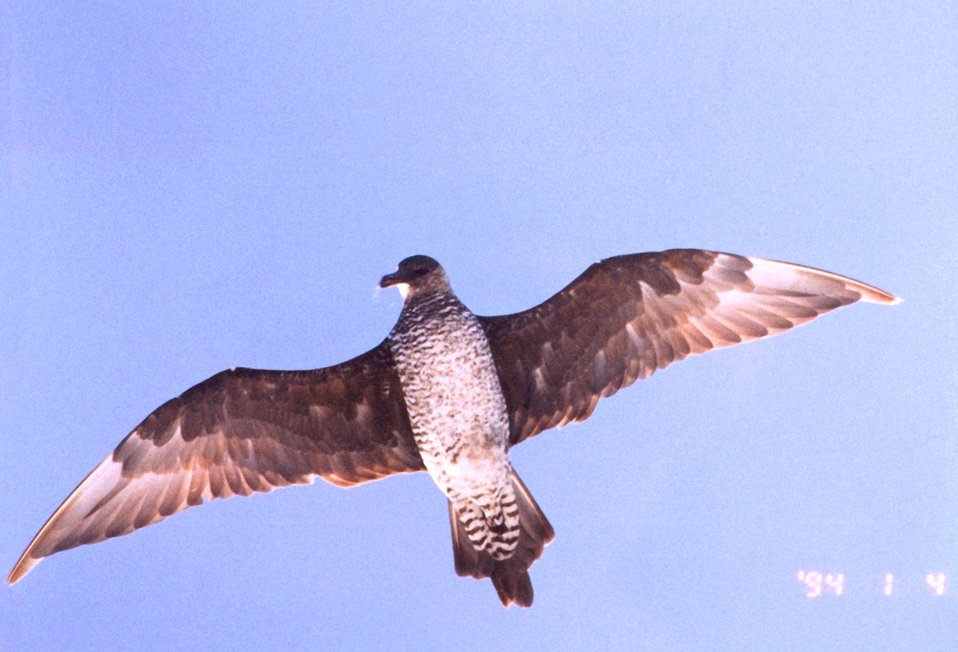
Sea bird hovering overhead.